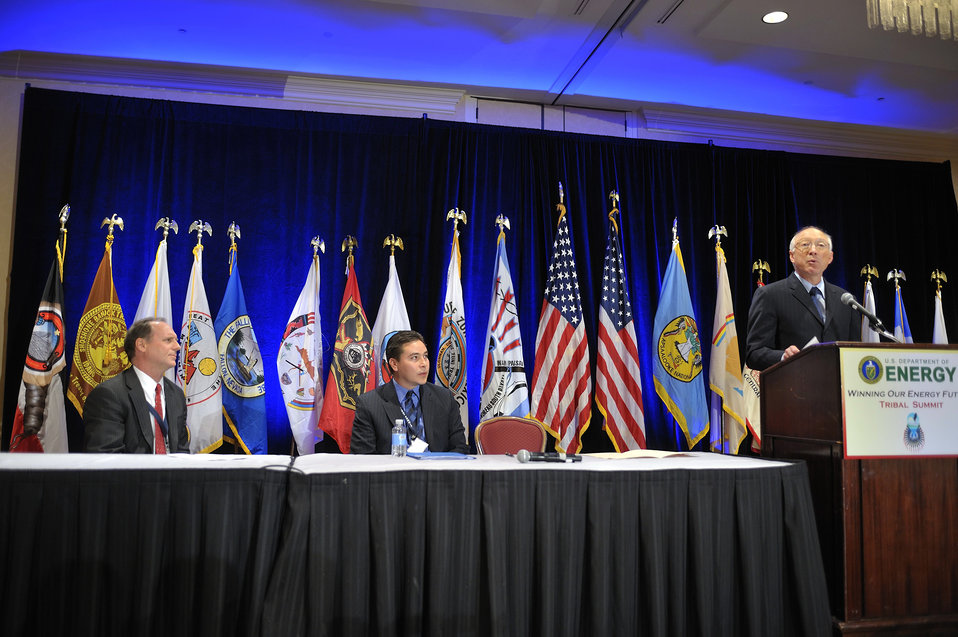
Tribal Energy Summit

From left to right: DOE Assistant Secretary for Congressional and Intergovernmental Affairs, Jeff Lane, and Del Laverdure listen after introducing Secretary of Interior Ken Salazar